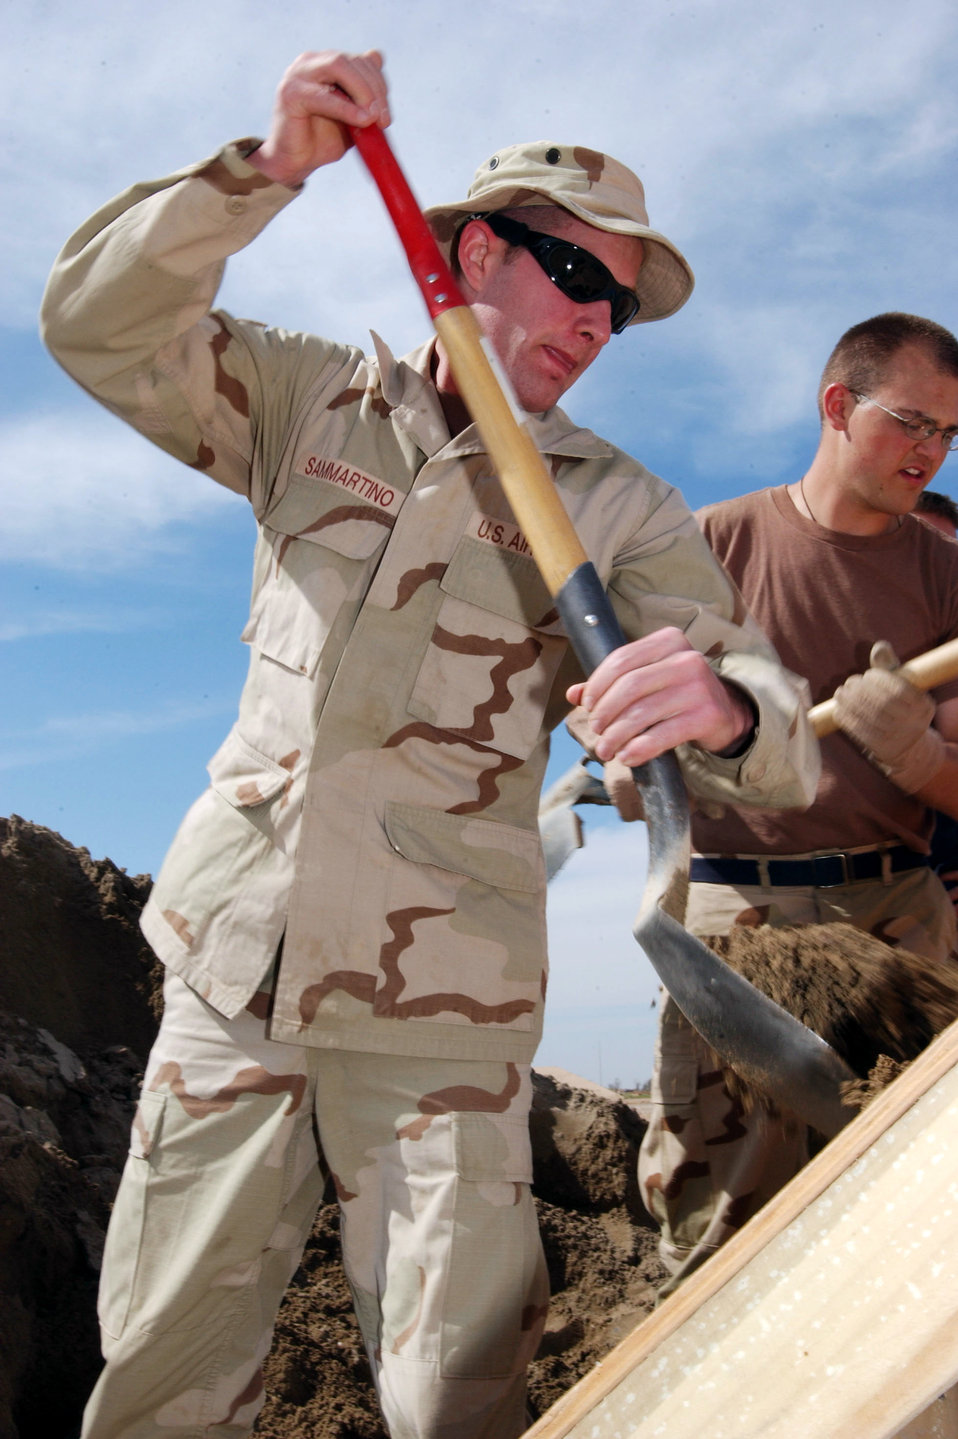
Sand bagging

BALAD AIR BASE, Iraq -- Staff Sgt. Jason Sammartino shovels sand into a sand bag during a detail here April 7. Sergeant Sammartino is a tactical telephone systems technician with the 332nd Expeditionary Communications Squadron.